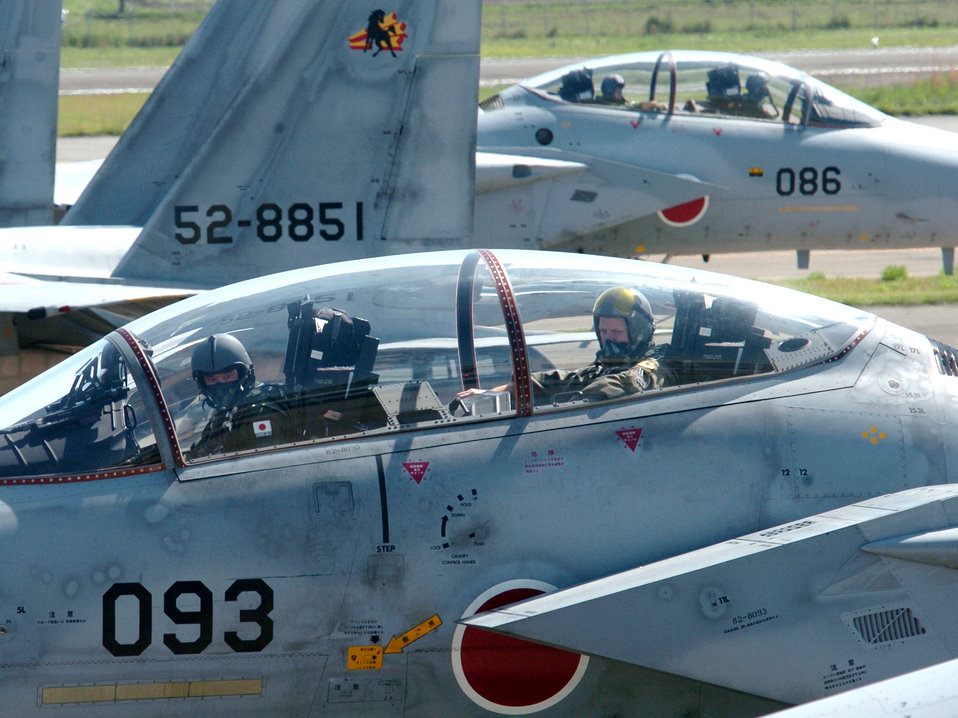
U.S., Japanese Airmen train together during air refueling

NYUTABARU AIR BASE, Japan -- Japanese Maj. Yasuhiro Sudo (left) and Maj. Malcolm Kenemy prepare to take off for an afternoon mission during hands-on air-to-air refueling training here. Japanese F-15 Eagle pilots, under the watchful eye of U.S. Airmen, are getting trained to qualify in aerial refueling. Major Kemeny is an F-15 pilot from the 18th Operations Group at Kadena Air Base, Japan.